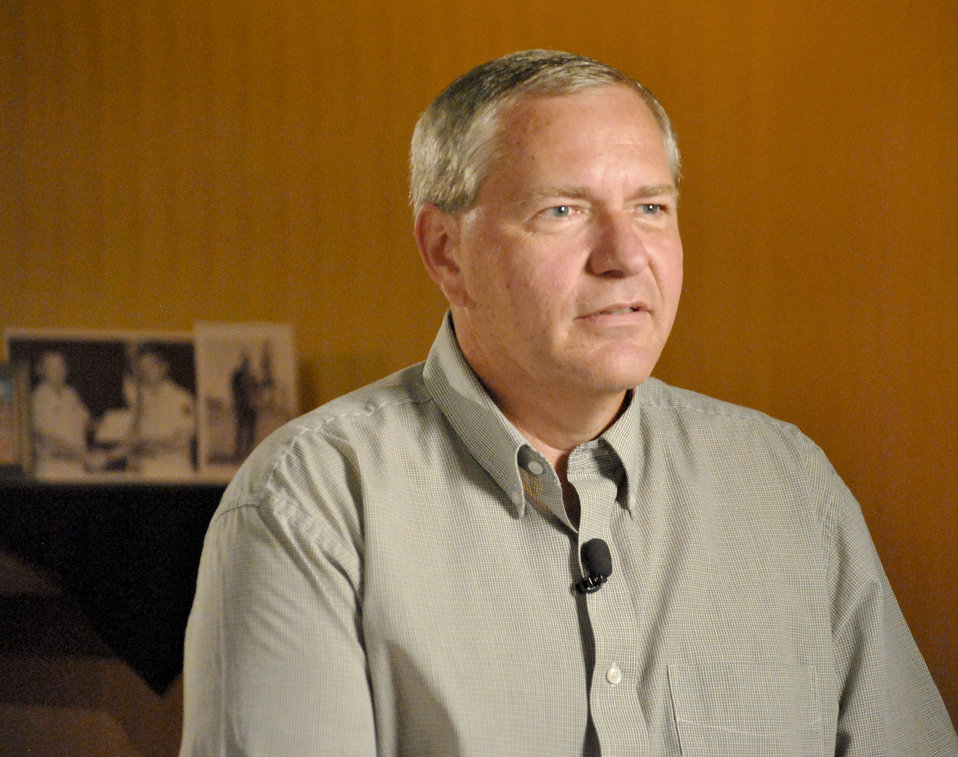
CMSgt Etchberger - Medal of Honor

Cory Etchberger, son of Air Force Medal of Honor recipient Chief Master Sgt. Richard Etchberger, explains the process leading to his father's award, Sept. 19, 2010.